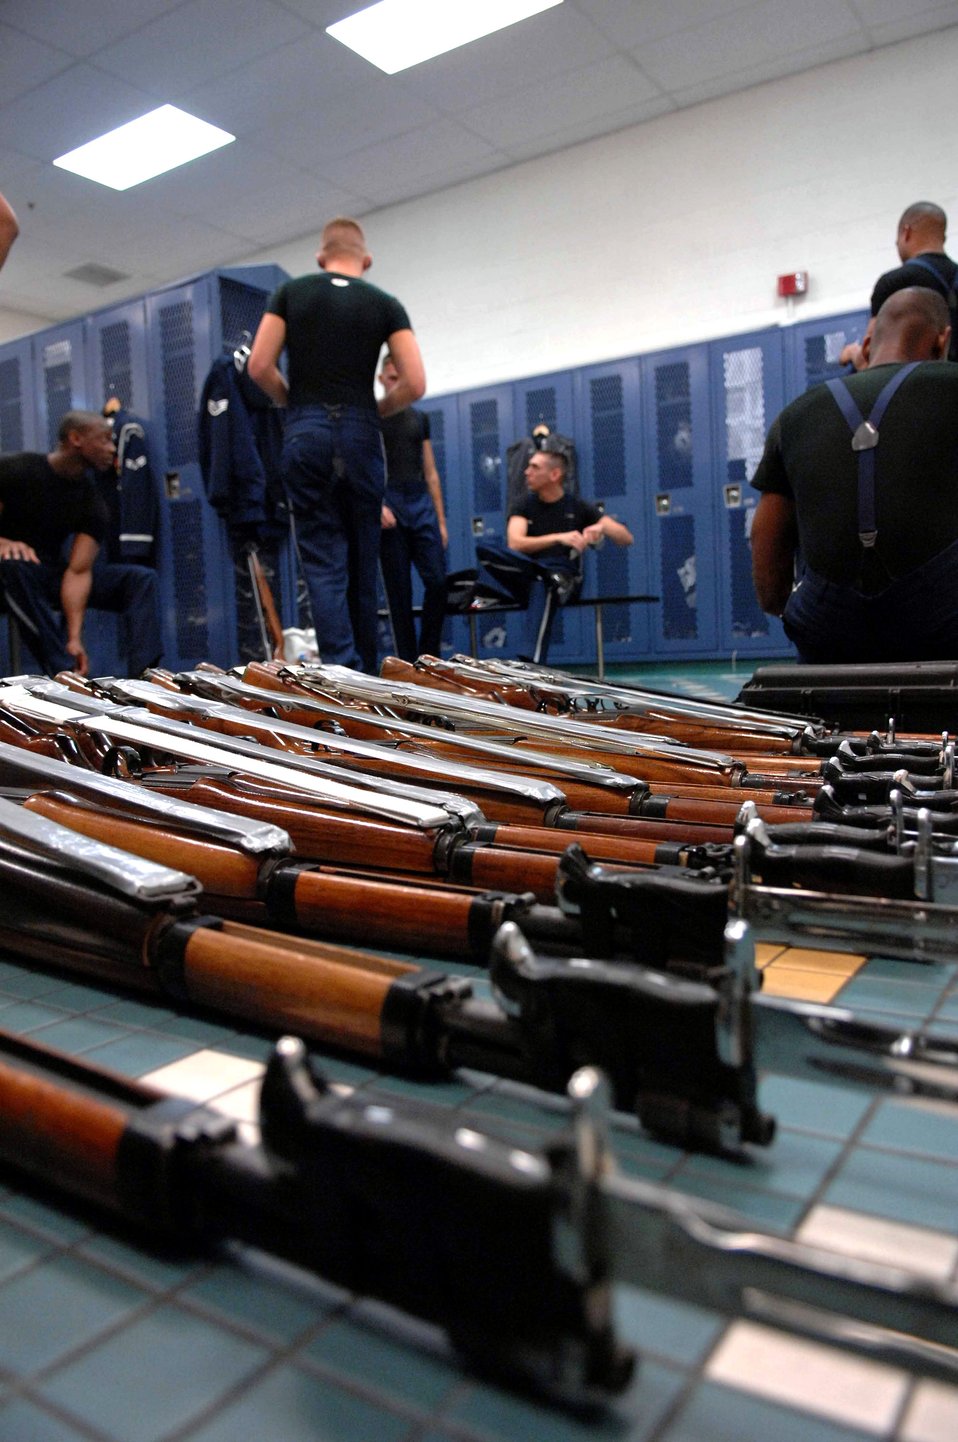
Vegas performance

Members of the Air Force Honor Guard drill team prepare for their performance at the Palo Verde High School Gym Nov. 6 in Las Vegas. The Air Force Honor Guard drill team is in Las Vegas for 14 performances throughout the military and civilian community and will perform during the Air Force 60th Anniversary Air Show and opening for Tops In Blue.